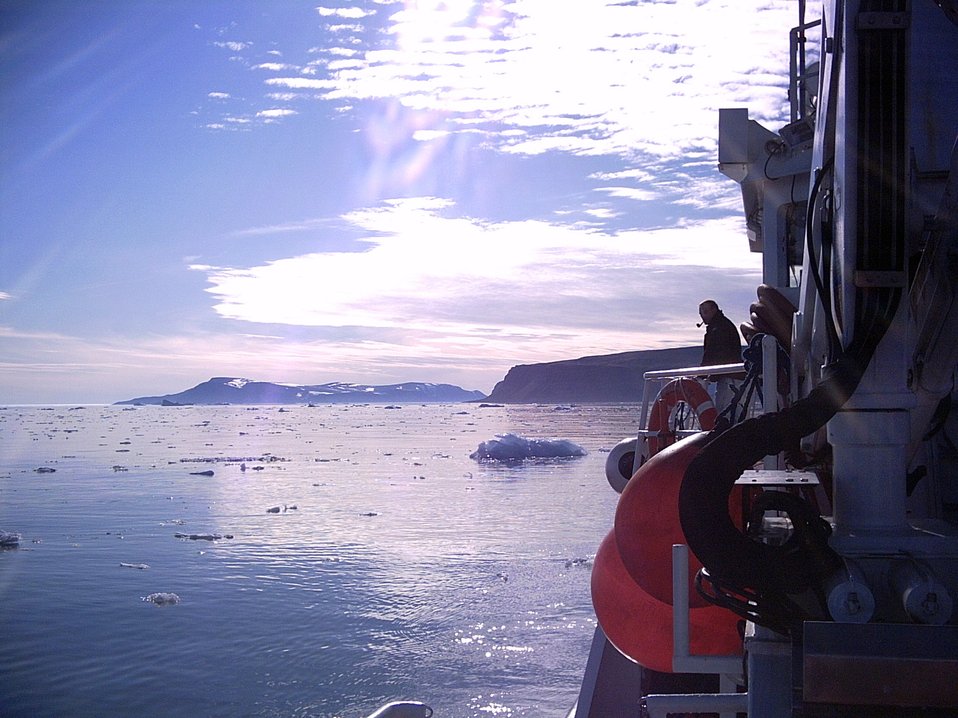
Open water

THULE AIR BASE, Greenland -- John Hansen overlooks the North Star Bay during an